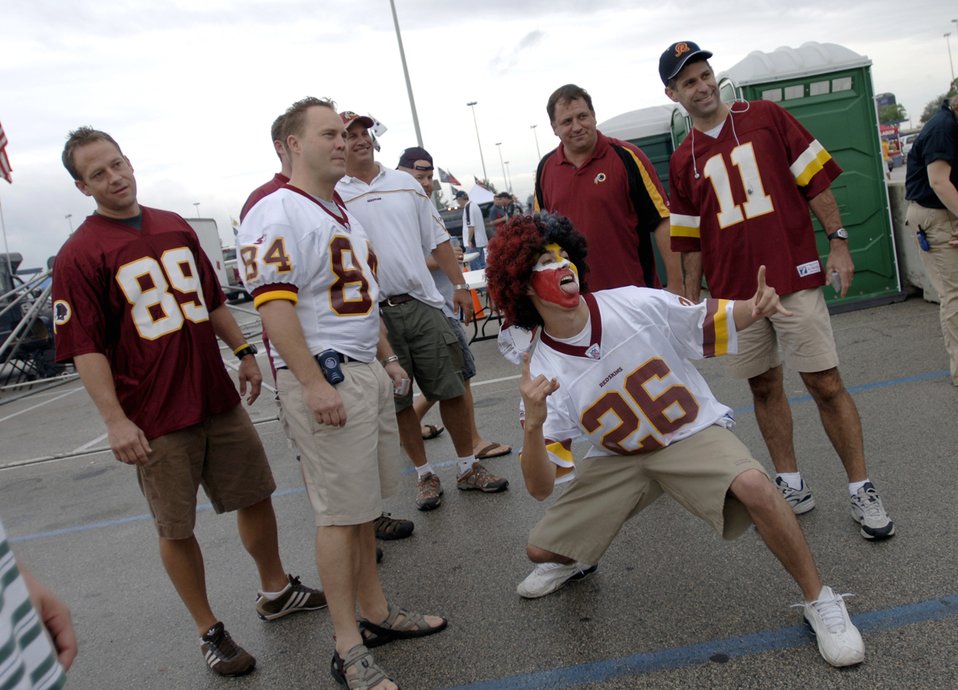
The Texans honored military servicemembers in their Salute to the Military day

Washington Redskins fan Airman 1st Class Nicholas Sandoval and his friends yell and pose for a picture during their tailgate party in the parking lot of Reliant Stadium in Houston Sept. 24 prior to the Houston Texans and Redskins National Football League game. Airman Sandoval is from the 509th Aircraft Maintenance Squadron from Whiteman Air Force Base, Mo.